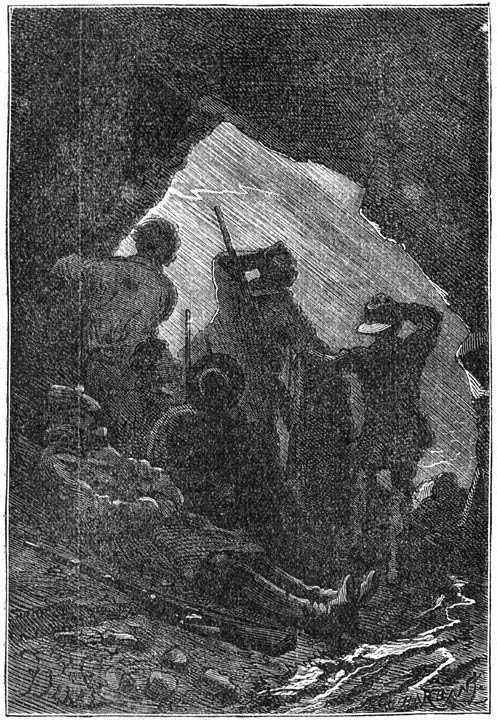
An illustration from Jules Verne's novel 'The Mysterious Island' (1873-74) drawn by Jules Férat. Polski: Ilustracja powieści Juliusza Verne'a 'Tajemnicza wyspa' (tytuł przekładany także jako: Wyspa tajemnicza, 1873-74) autorstwa Julesa Férata. Français : Jules Verne: 'L’Île mystérieuse' (1873-74), dessins par Jules Férat. Orginal description from the book: Français : Les échos répercutaient le fracas du tonnerre…